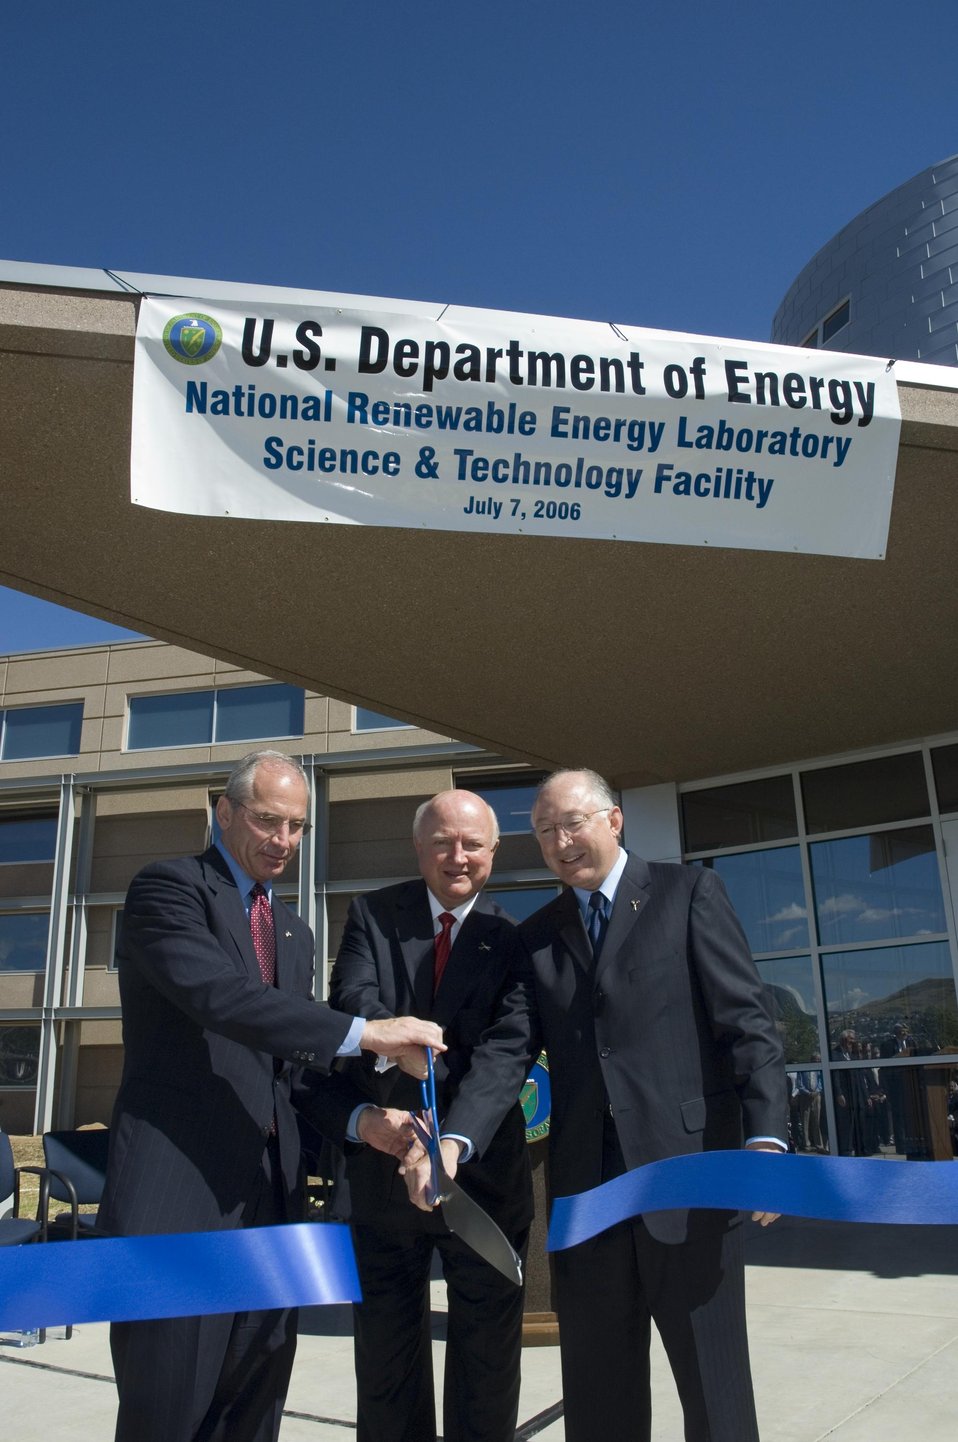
SECRETARY OF ENERGY SAMUEL BODMAN WITH COLORADO CONGRESSMAN BOB BEAUPREX AND COLORADO SENATOR KEN SALAZAR CUT THE RIBBON TO OFFICIALLY OPEN DOE NATIONAL RENEWABLE ENERGY LABORATORY'S SCIENCE AND TECHNOLOGY FACILITY.

NREL'S SCIENCE AND TECHNOLOGY FACILITY IS 71,000 SQUARE FOOT FACILITY PROVIDES SPACE AND EXPANDS RESEARCH CAPABILITIES NECCESSARY TO ACCOMPLISH DOE'S GOALS IN PHOTOVOLTAICS, HYDROGEN, SOLAR, BUILDINGS, SOLID-STATE LIGHTING, THIN-FILM COATINGS AND DEVICES, ELECTROCHROMICS AND NANOTECHNOLOGIES. IT IS DESIGNED TO BE NREL'S FIRST GOLD-LEVEL LEED-CERTIFIED BUILDING, INCORPORATING FEATURES THAT ARE EXPECTED TO REDUCE ENERGY USE BY 41% COMPARED TO SIMILAR NEW FEDERAL BUILDINGS.